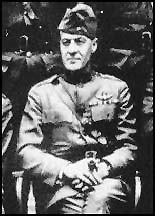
Maj. Gen. Benjamin D. Foulois

Early Years -- Maj. Gen. Benjamin D. Foulois